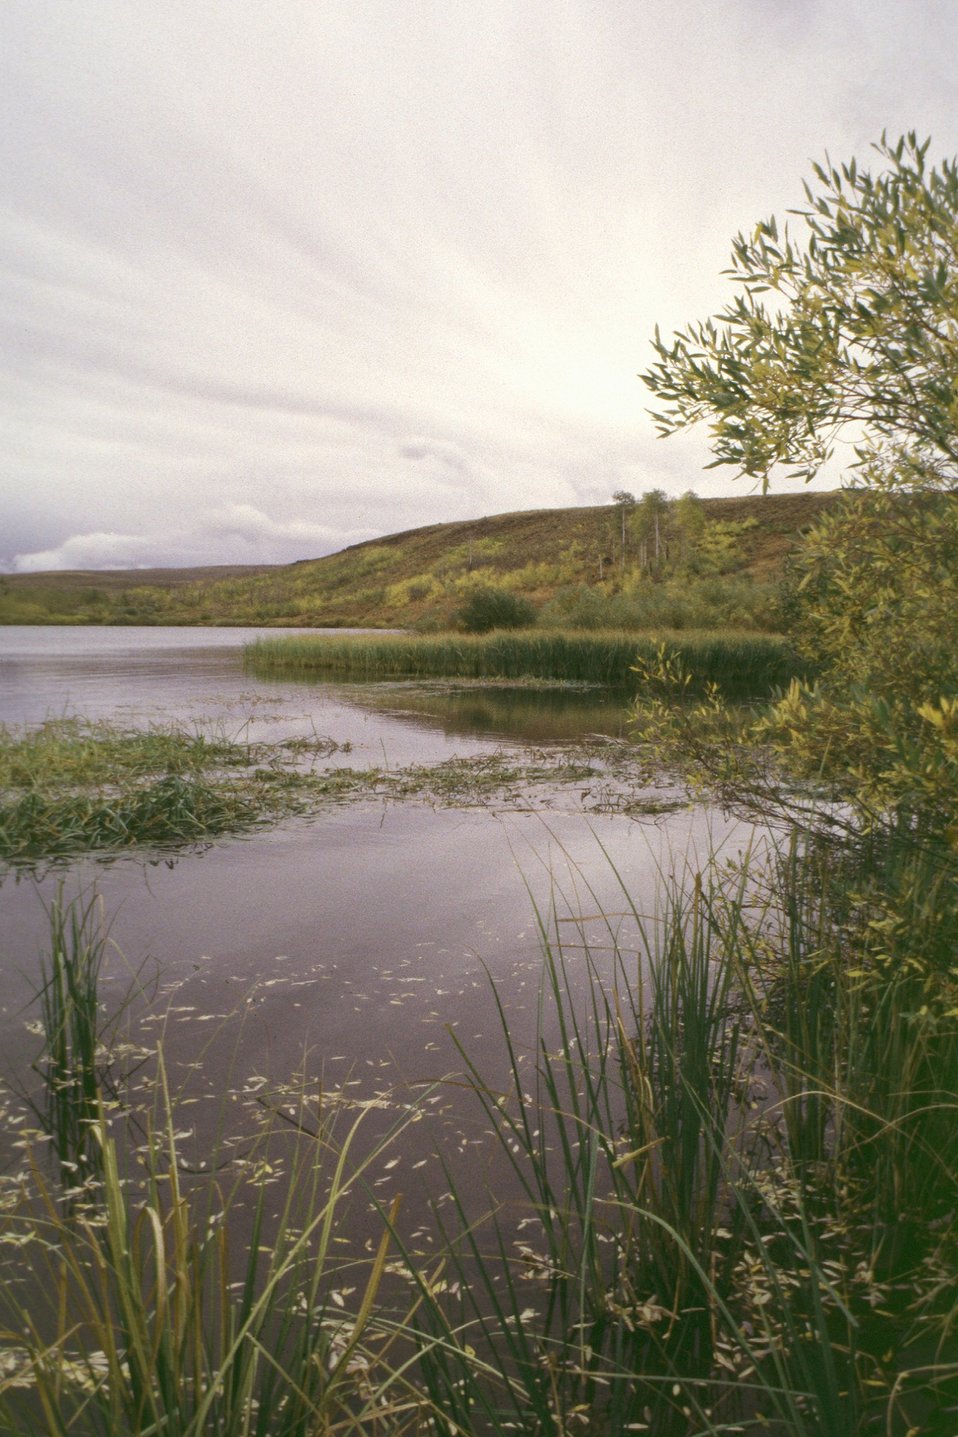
Aspen at Fish Lake, Steen's Mountain.